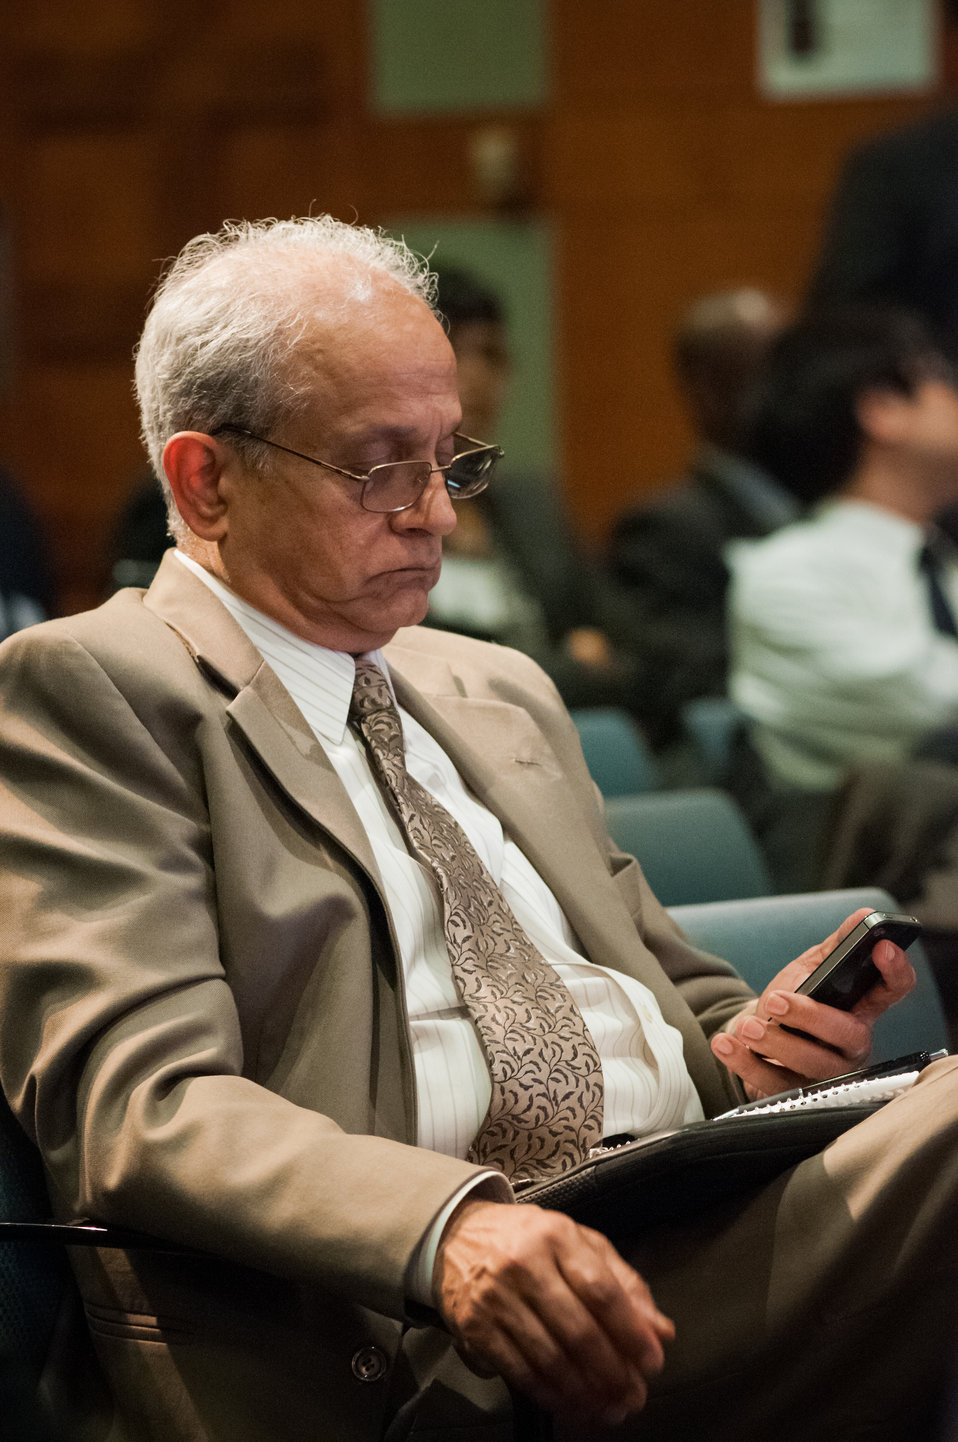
U.S. Department of Agriculture (USDA) National Institute of Food and Agriculture (NIFA) Director Dr. Sonny Ramaswamy takes notes during the second day of the two day G-8 International Conference on Open Data for Agriculture in Washington, D.C. on Tuesday, Apr. 30, 2013. The conference launched a new 'virtual community' as part of a suite of actions, including the release of new data that the U.S. is taking to give farmers and ranchers, scientists, policy makers and other members of the public easy access to publicly funded data to help increase food security and nutrition.